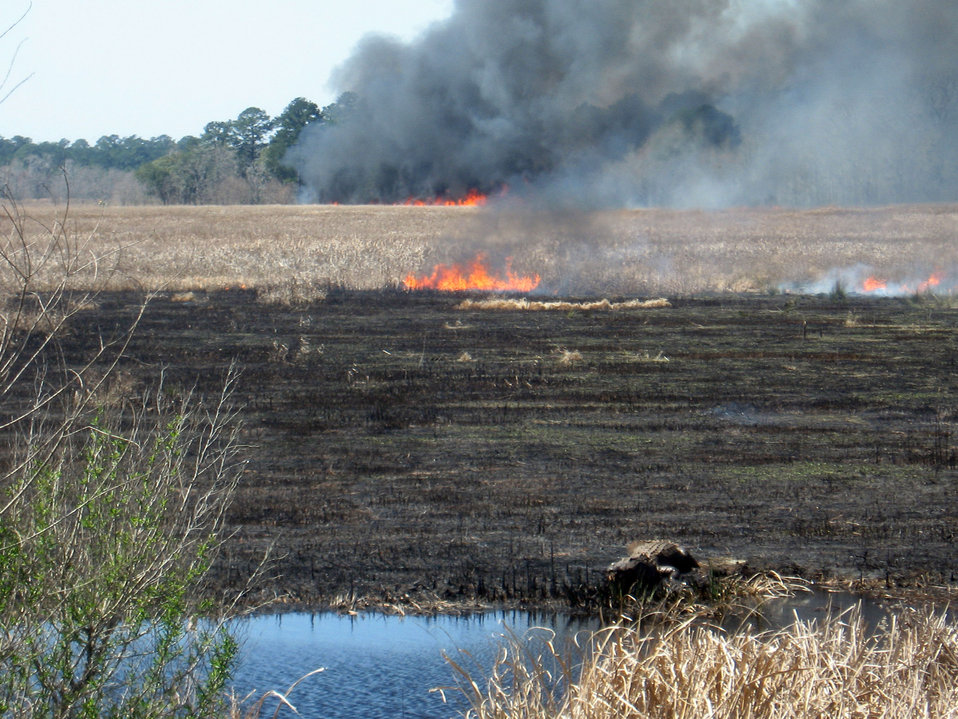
Ace Basin Gator Rx031014

A large alligator checks out a prescribed fire at Ace Basin NWR. The prescribed fire was conducted by USFWS firefighters on 3/10/14 to help reduce wildfire risk and improve wildlife habitat.